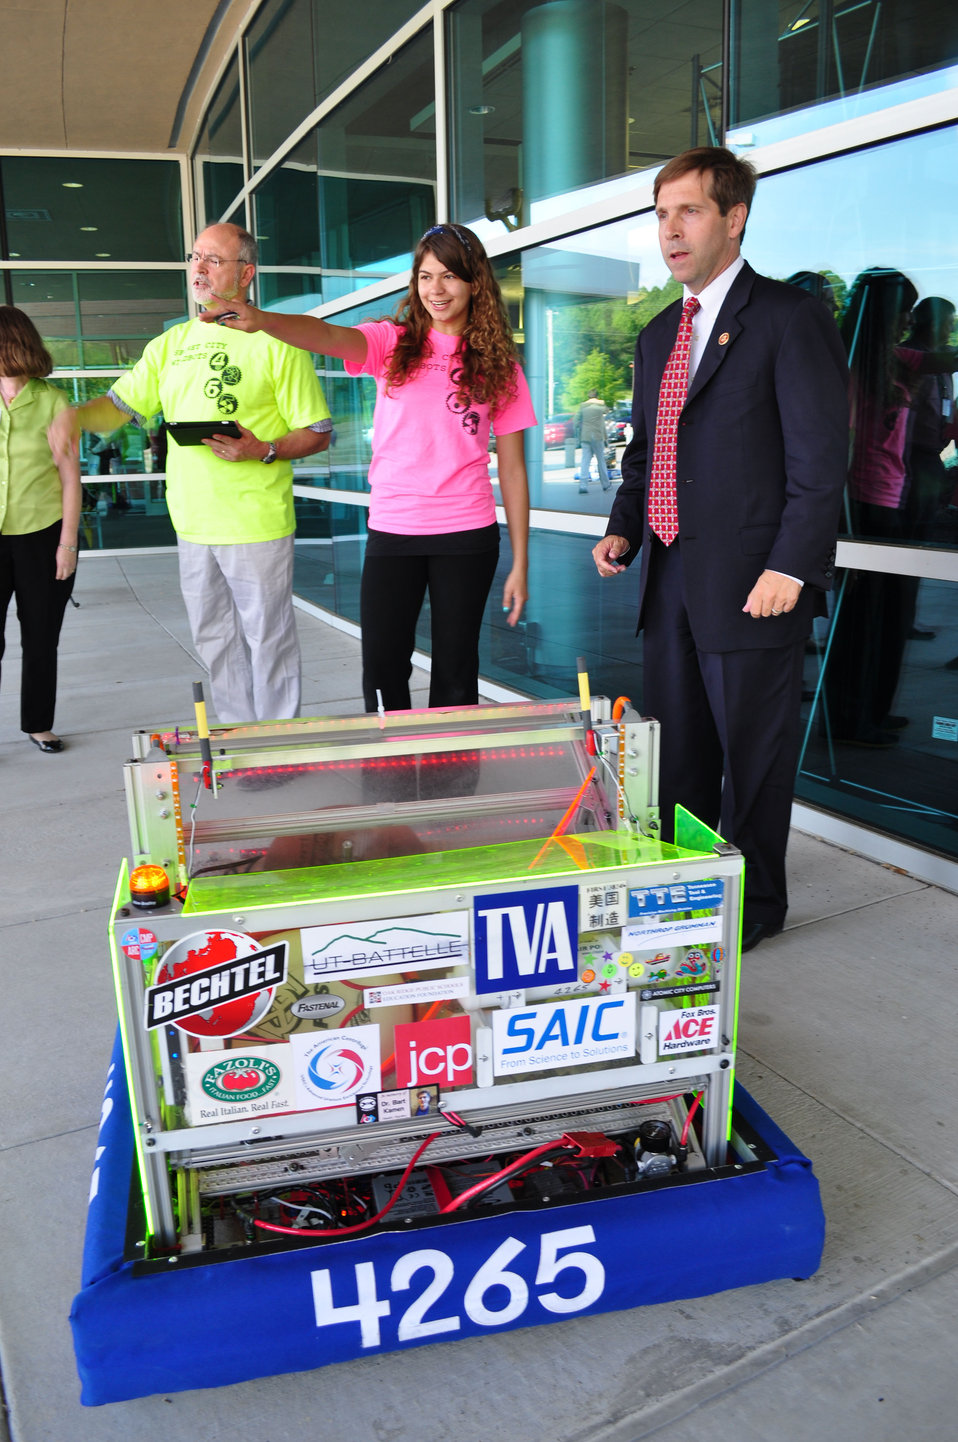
Congressman Chuck Fleischmann with Oak Ridge HS Robotics Team Tennessee Valley Corridor 2013 Oak Ridge

13-062 DOE photo Lynn Freeny 5-29-2013 Oak Ridge Tennessee